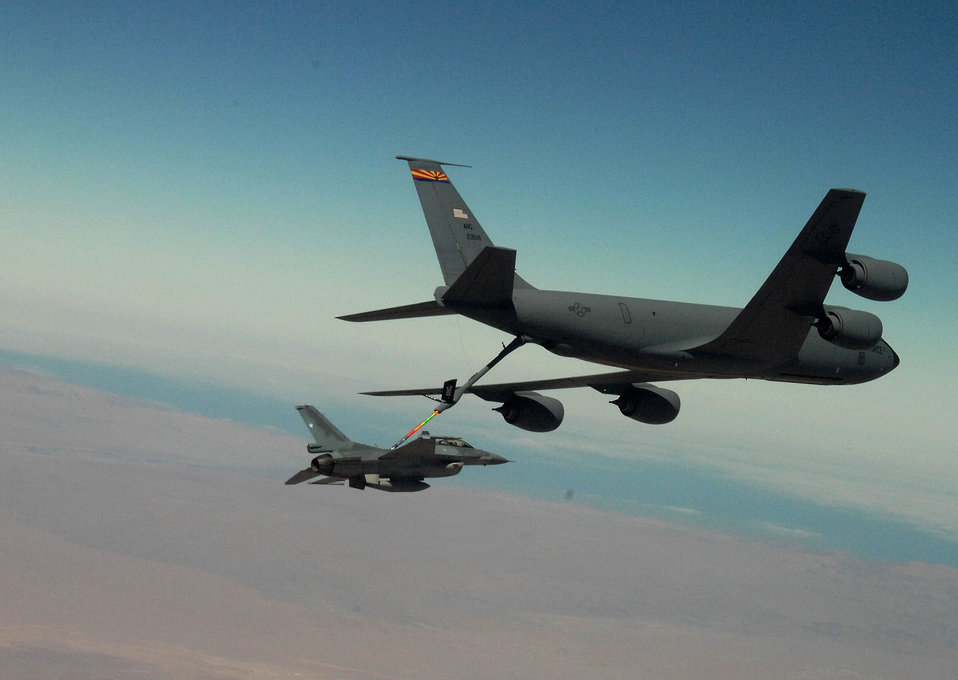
Airpower summary for Oct. 22, 2007

Arial refuelers, like this KC-135 Stratotanker refueling an F-16 Fighting Falcon, keep coalition aircraft in the fight to support operations Iraqi Freedom and Enduring Freedom . On Oct. 21, aerial refueling crews flew 40 sorties and offloaded approximately 2.4 million pounds of fuel to 175 receiving aircraft.